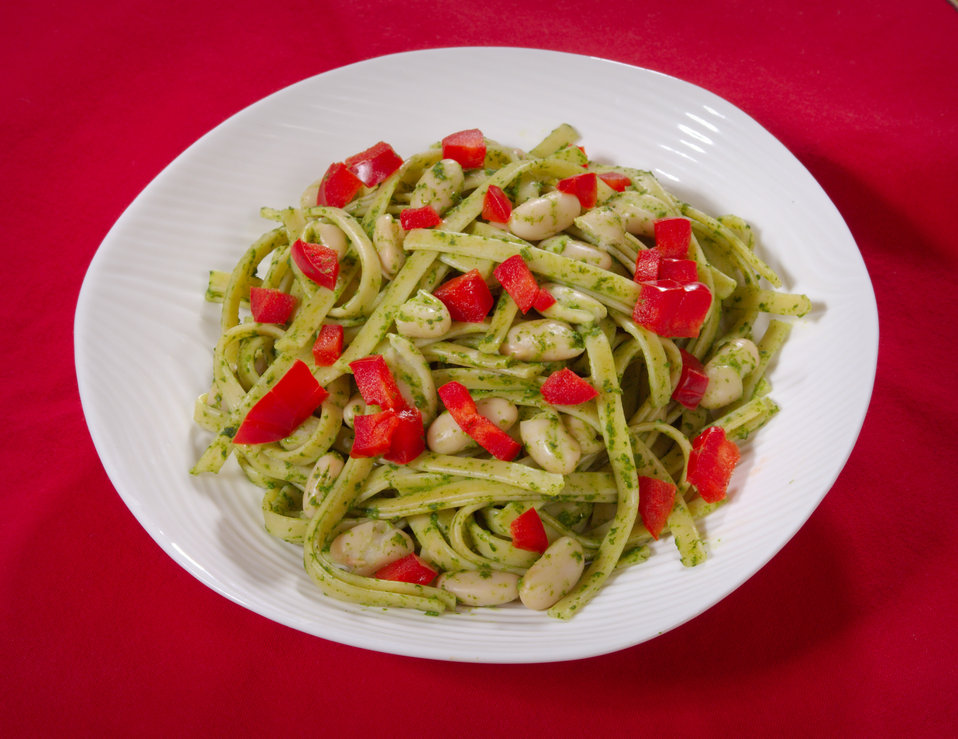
This Spinach Pesto Pasta is a delicious dish, high in protein, fiber and vitamins, and low in saturated fats and cholesterol. The recipe, which may be accessed by way of the link below, calls for fettucine, olive oil, garlic, basil leaves, low-fat, low-sodium chicken broth, parmesan cheese, cannellini (white beans), red bell pepper, and black pepper. Fresh spinach may also be included.